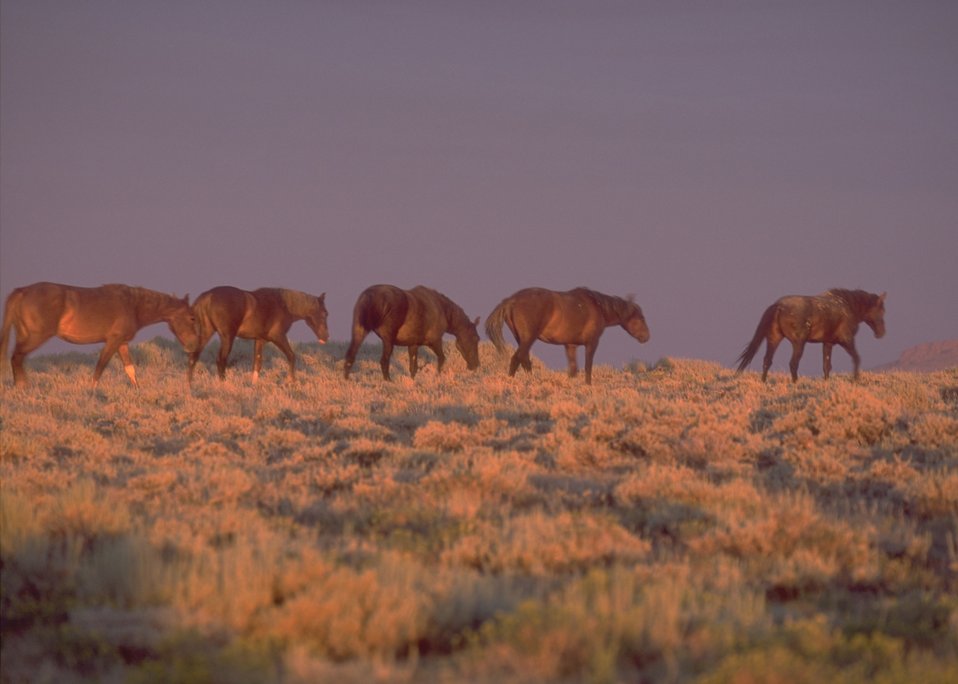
Wild horses, Rock Springs Field Office.